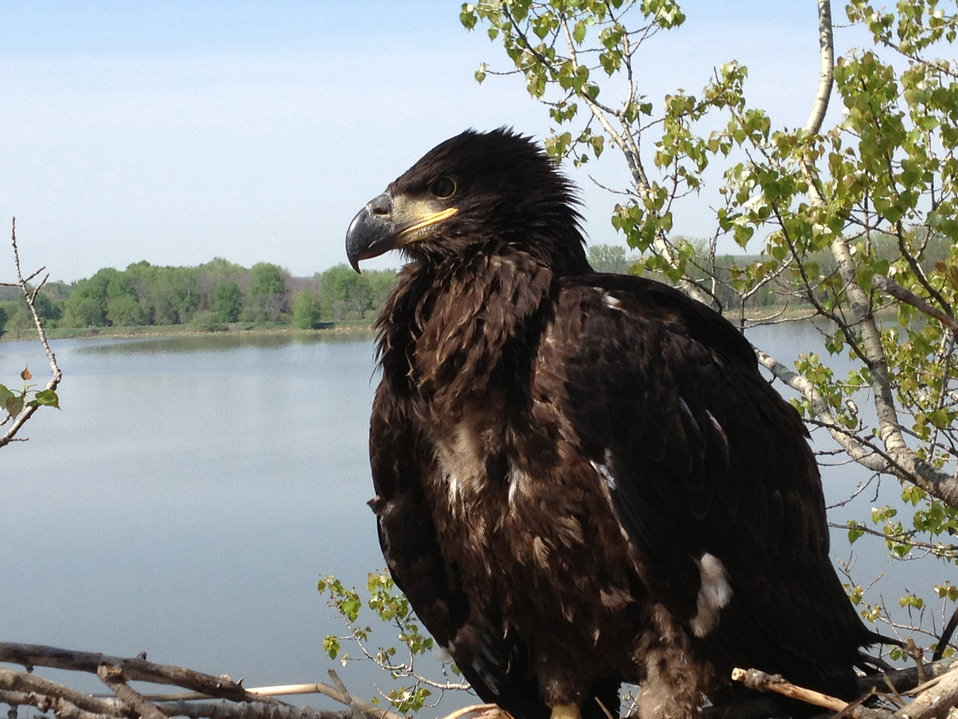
Bald Eagle, 52 Days Old By USFWS Jeremy N. Moore

52-day old Bald Eagle eaglet. May 9, 2013

Photo by USFWS; Jeremy N. Moore